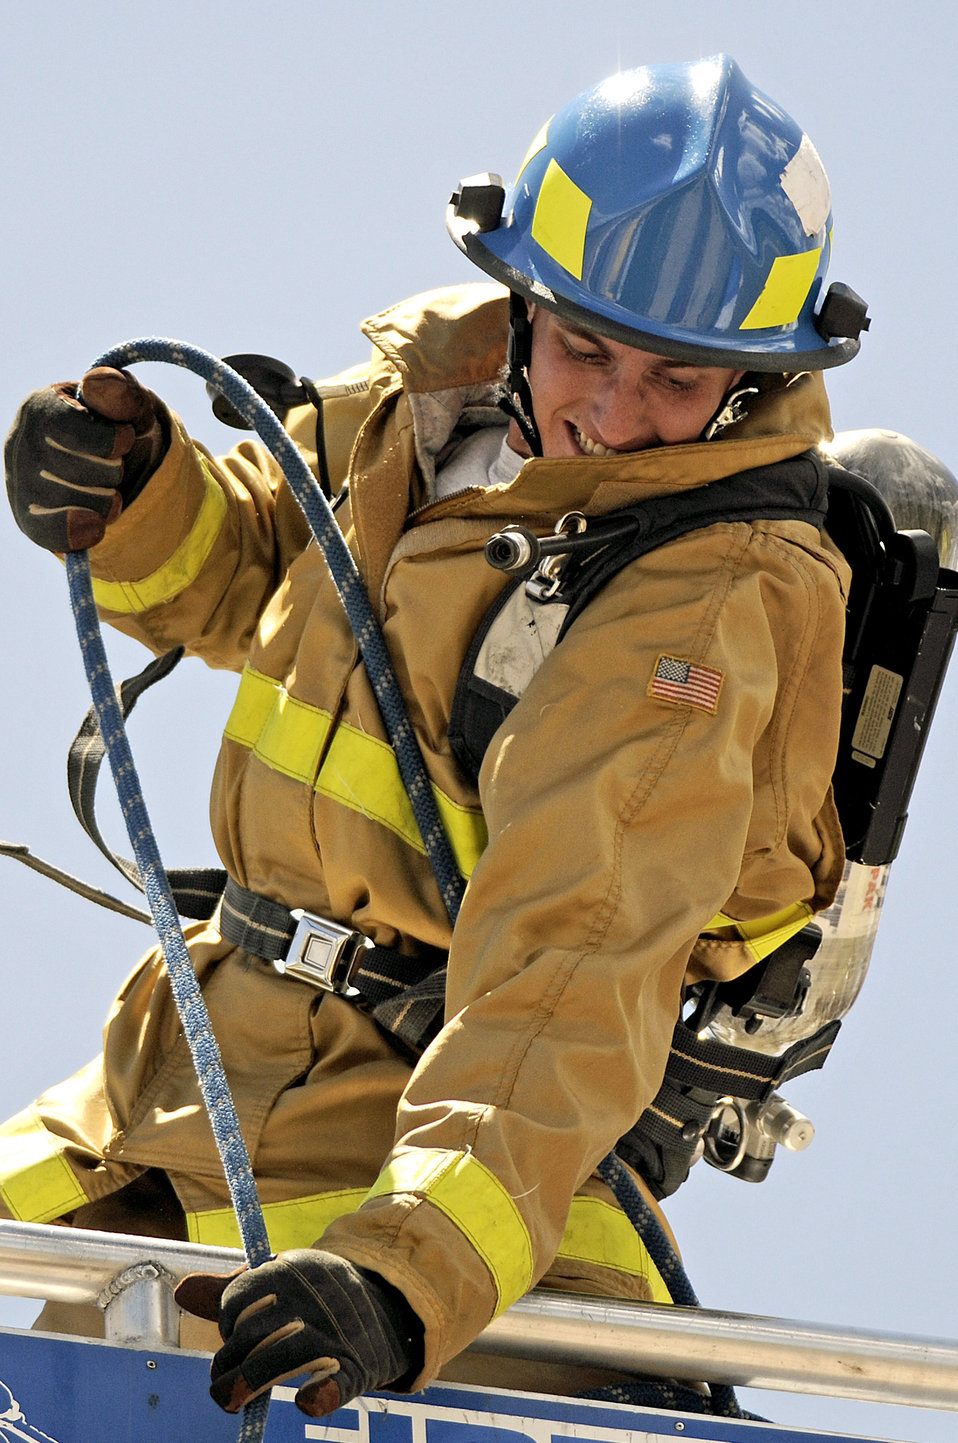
Firefighters Combat Challenge

Air Force Academy firefighter Staff Sgt Tanner Derosier hoists a 45-pound hose up a five story tower during the two-day regional Firefighter Combat Challenge competition held June 24/25 at the Air Force Academy's Falcon Stadium.